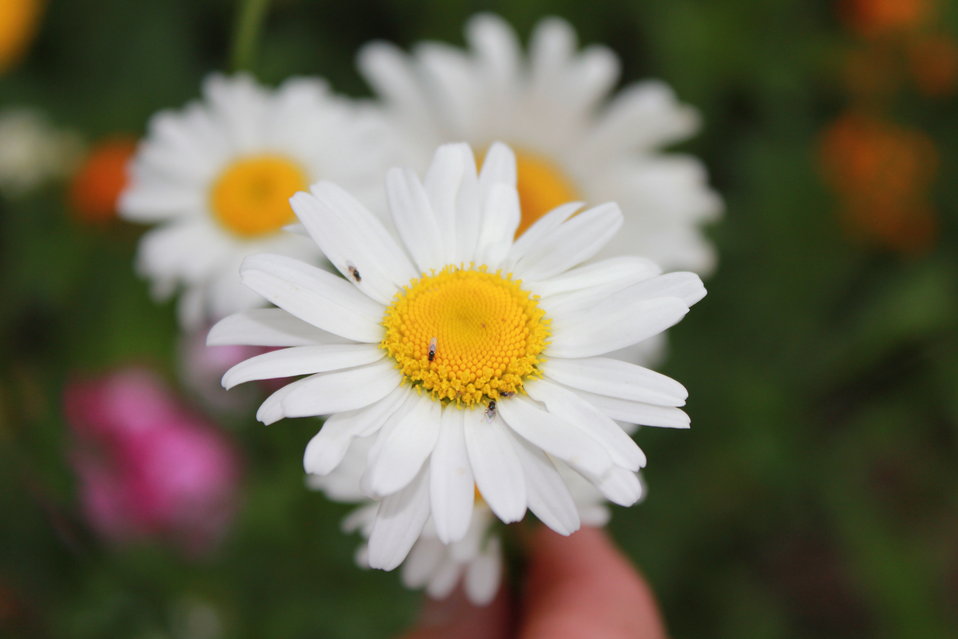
Pollinators in Hadley, MA.